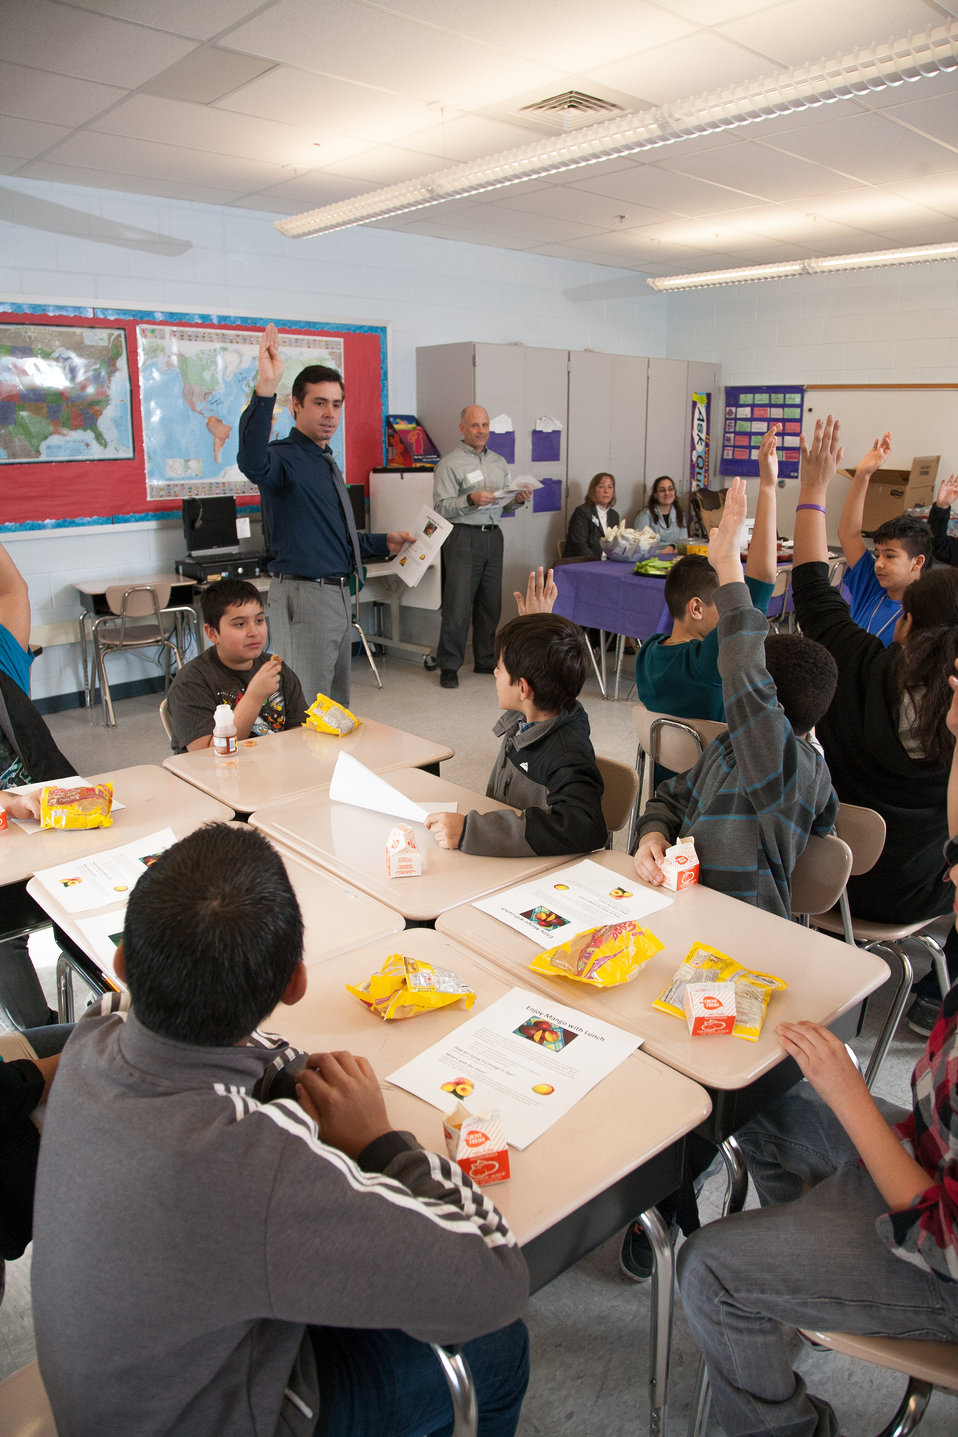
Mr. Damien Grasso conducts an informal survey with his Harmony Hills Elementary School 5th grade students, in Silver Spring, MD who are using a live overseas video connection, with Dalry Primary School, in North Ayershire, Scotland, United Kingdom, during the inaugural International School Meals Day (ISMD) in Silver Spring, MD, on Friday, March 8, 2013. The students used live overseas video connection, during the inaugural International School Meals Day (ISMD) at Harmony Hills Elementary School in Silver Spring, MD, on Friday, March 8, 2013. The ISMD has 14 classrooms (grades 3-8) in the U.S. connected with 14 classrooms in Scotland. USDA plans to expand the initiative to include partnerships with additional countries in future years. USDA's Food and Nutrition Service oversees the administration of 15 nutrition assistance programs that work in concert to form a national safety net against hunger. Learn more by visiting www.fns.usda.gov and twitter @USDANutrition.